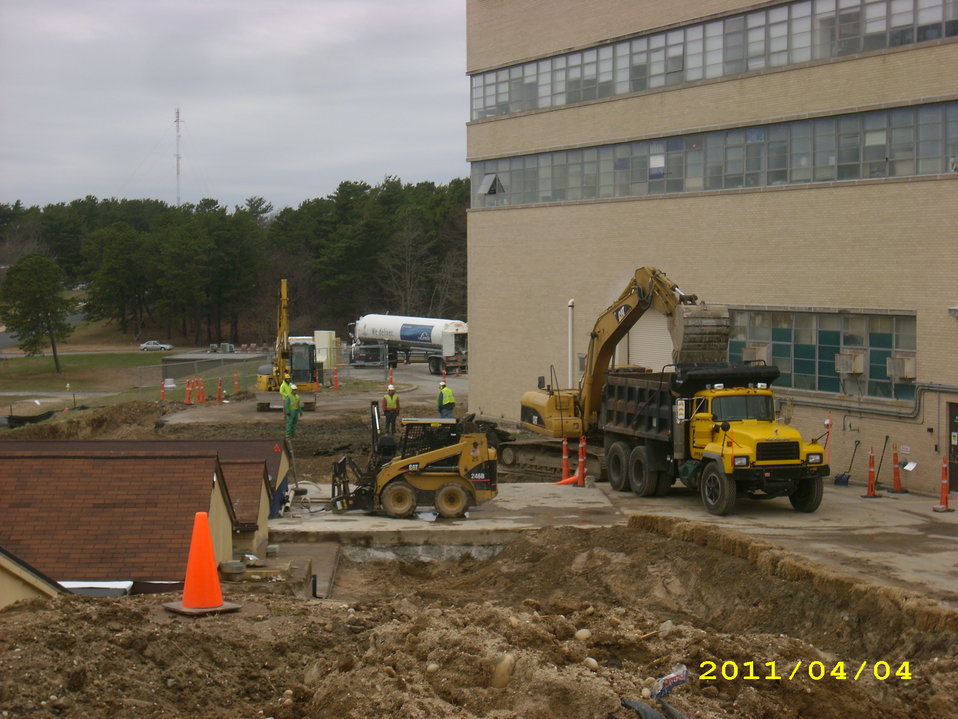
Brookhaven Recovery Act Workers Install Cap, Advance Reactor Decommissioning

Recovery Act workers excavate the area outside the Brookhaven Graphite Research Reactor to prepare for the installation of an impermeable cap.

Recovery Act workers completed the installation of an impermeable cap over the grounds of a reactor building at Brookhaven National Laboratory (BNL) to prevent rain and other moisture from infiltrating radiologically contaminated soil. Installation of the cap is part of broader Recovery Act work at BGRR that involves decommissioning the reactor.